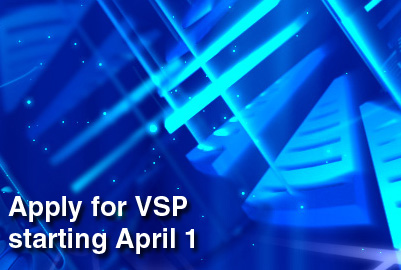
Voluntary Separation Pay